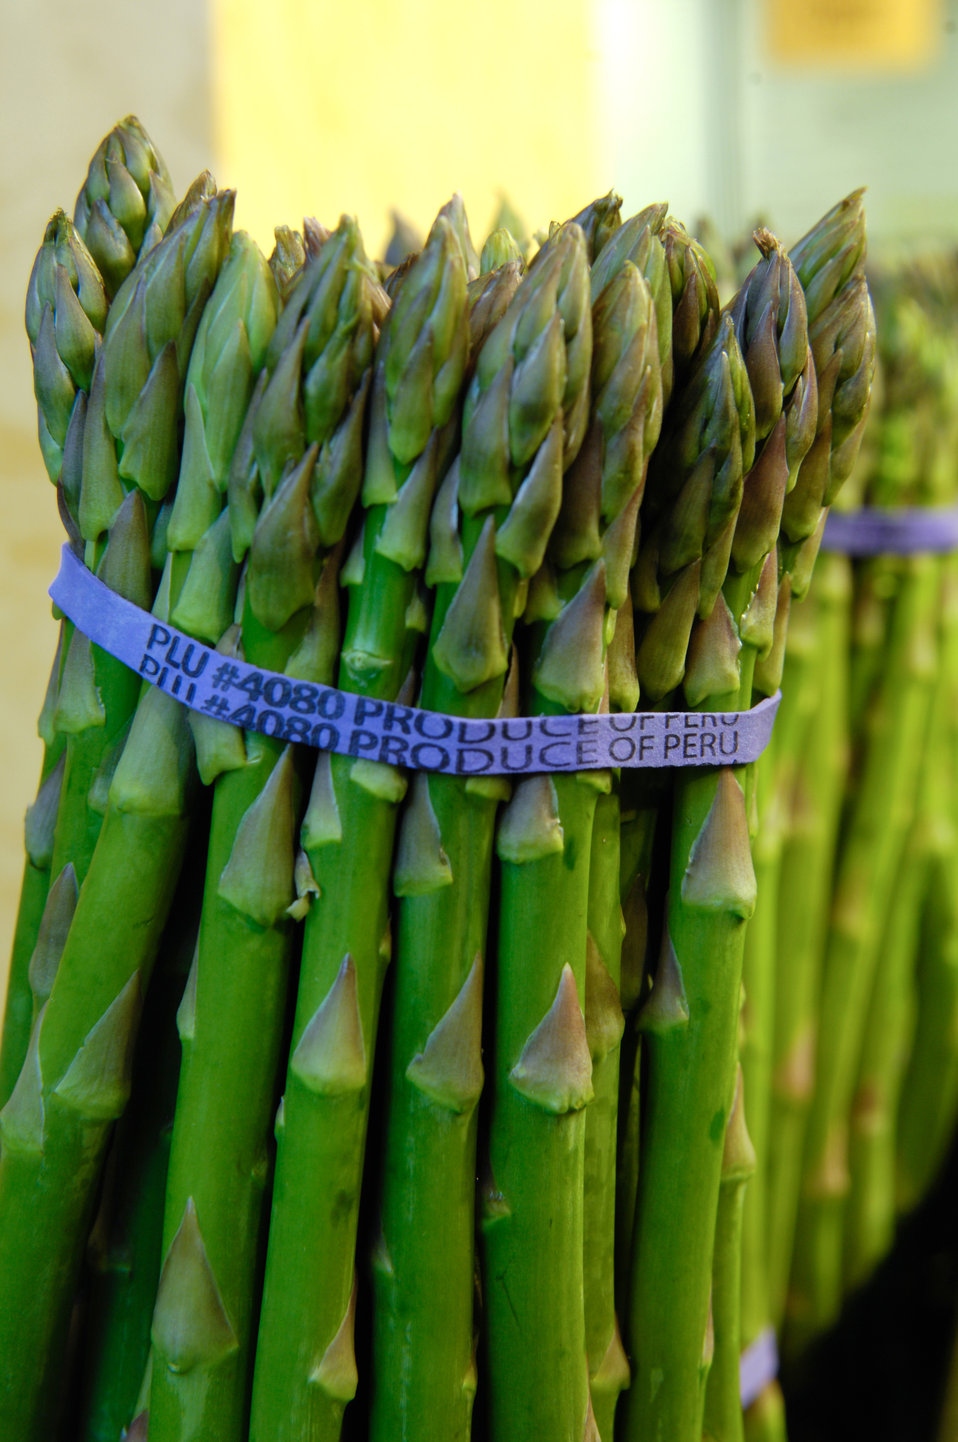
Asparagus sold at Wegman’s Supermarket in Fredericksburg, Virginia on September 1, 2009 displays the required Country of Origin Labels (COOL). COOL is a labeling law that requires retailer, such as full-line grocery stores, supermarkets, and club warehouse stores to notify their customers with information regarding the source of certain foods. Food products and covered commodities contained in the law include muscle cut and ground meats of beef, veal, pork, lamb, goat, and chicken; wild and farm-raised fish and shellfish; fresh and frozen fruits and vegetables; peanuts, pecans, and macadamia nuts; and ginseng. The U.S. Department of Agriculture (USDA) Agricultural Marketing Service (AMS) is responsible for the administration and enforcement of COOL.